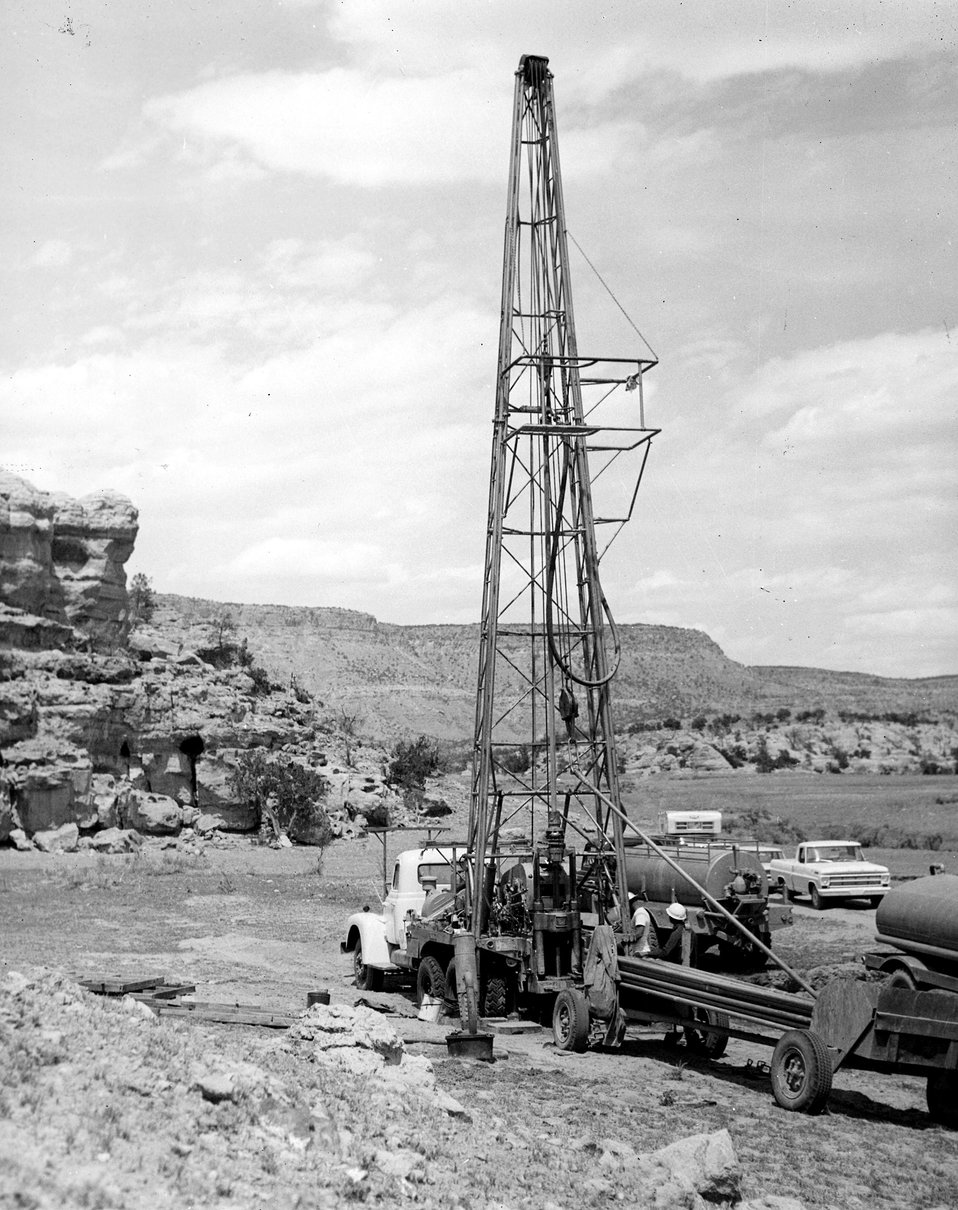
This uranium ore drill rig in New Mexico is being used in the industry's stepped-up efforts to develop the new reserve required to meet the fuel requirements of the nuclear power industry in the 1970's and 1980's. c. 1970